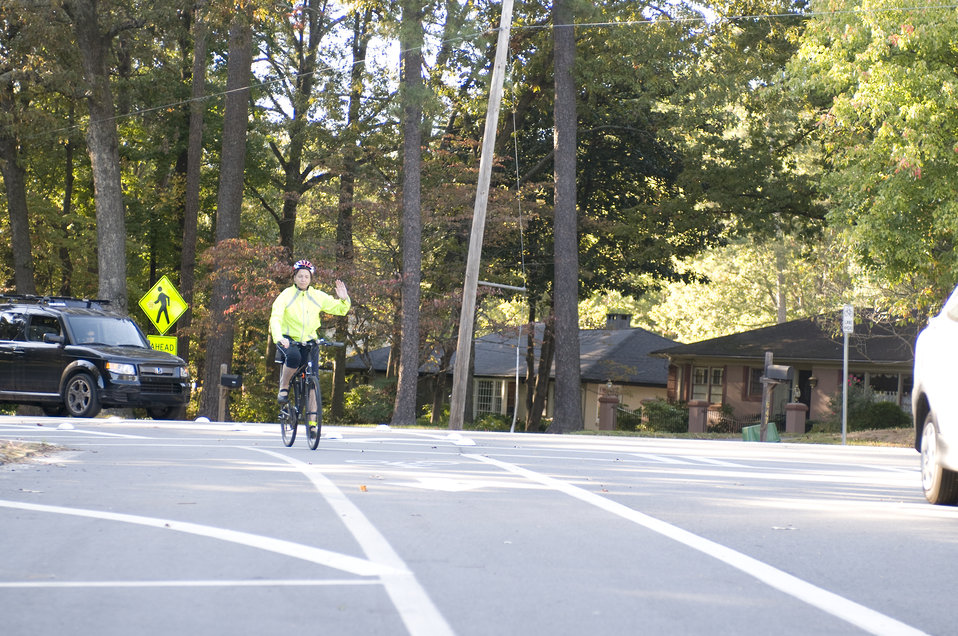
Wearing her protective, aerodynamic helmet, bright yellow windbreaker, and snug leggings, this Georgian bicyclist was signaling an automobile driver to her rear, that she was attempting a right-hand turn, while entering, and leaving an intersection. Note that this bicyclist was in her proper bicycle lane while she was sharing the road with motorized vehicle drivers.